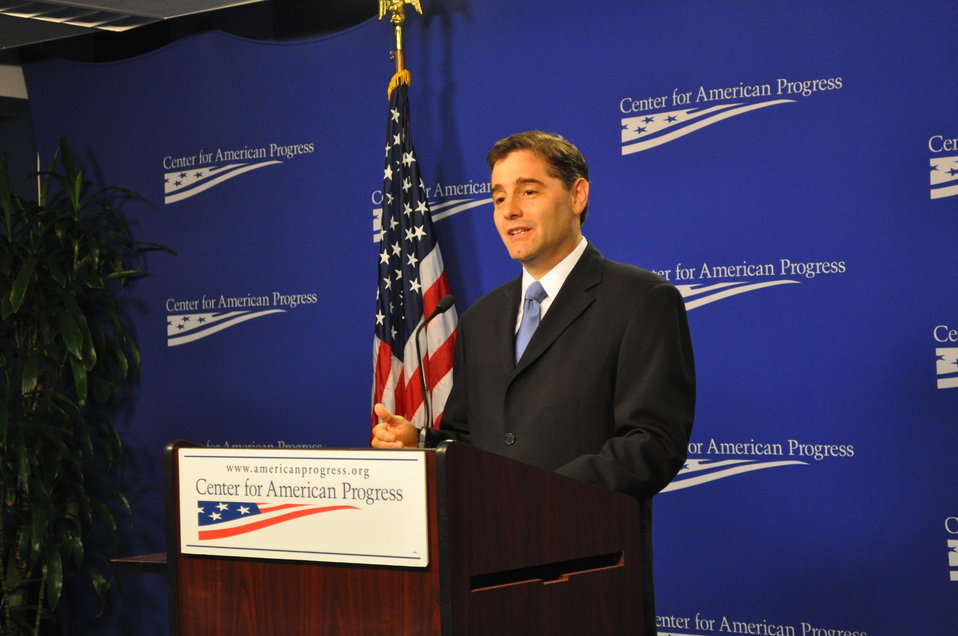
'Cramming' and Mystery Fees Event

Julius Genachowski, Chairman, Federal Communications Commission